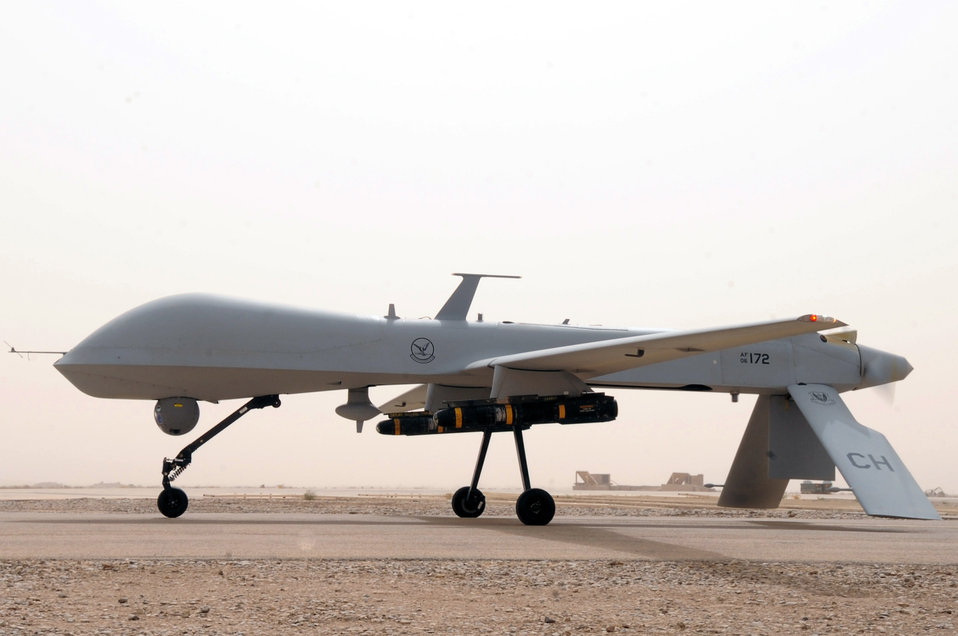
Predator targets anti-Afghan forces

An MQ-1 Predator unmanned aircraft prepares for take off in support of Operation Iraqi Freedom. The Predator provides integrated and synchronized close-air operations, to include intelligence, surveillance and reconnaissance.